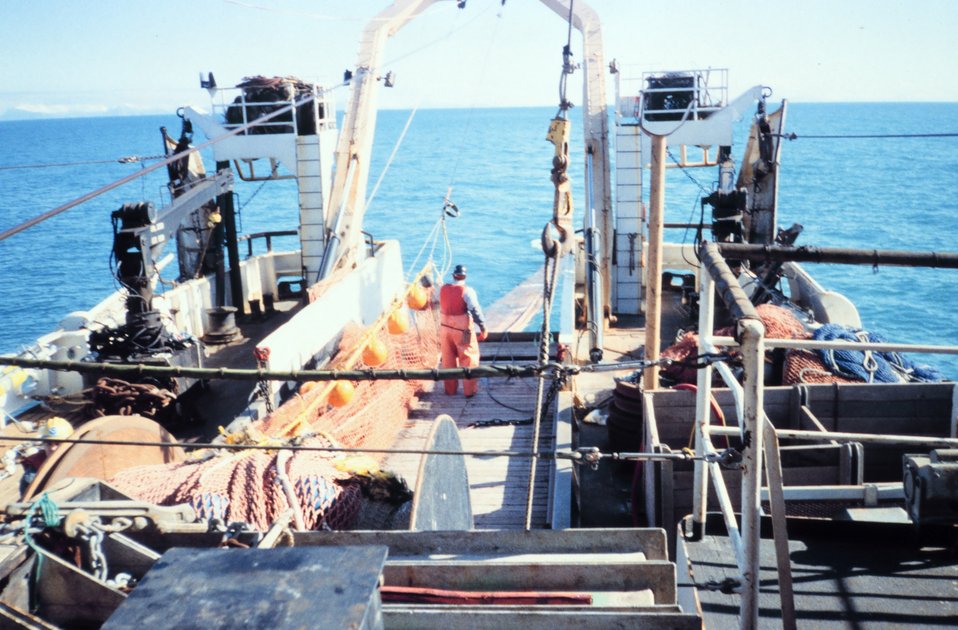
Photo # 1 - Streaming net during trawling operations. Yellow floats are pulled underwater but help keep the mouth of the net open while being towed.